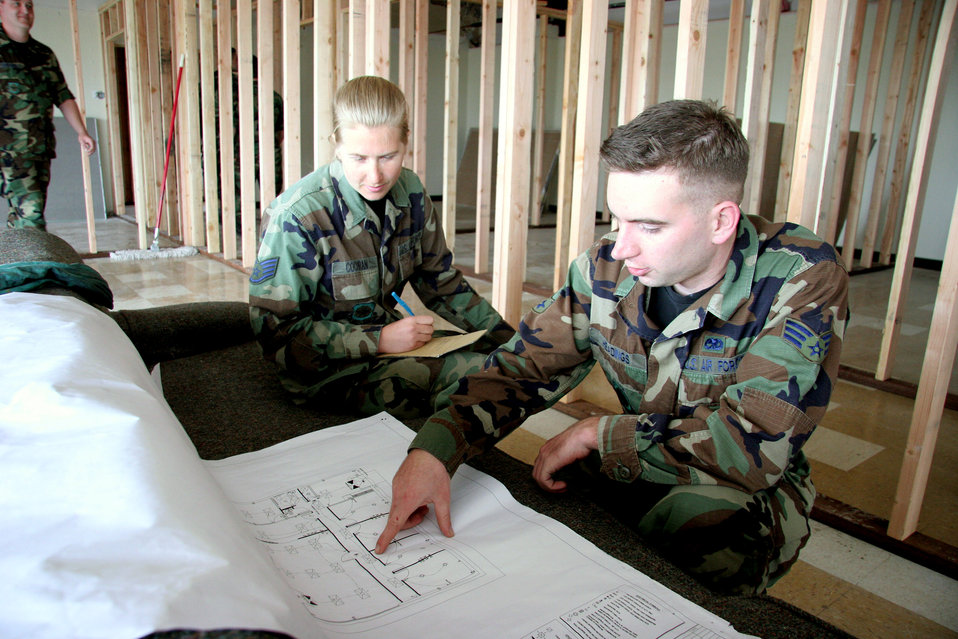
939th CES Washoe Nation

Staff Sgt. Karla Cochran and Senior Airman Daniel Headings review the construction plans for the tribal wellness center on the Washoe Indian Reservation near Carson City, Nev. May 15, 2006. They will be running electrical, phone, cable and internet wires throughout the building as part of an Air Force Reserve Command innovative readiness training program. Both are electricians with the 939th Civil Engineering Squadron.